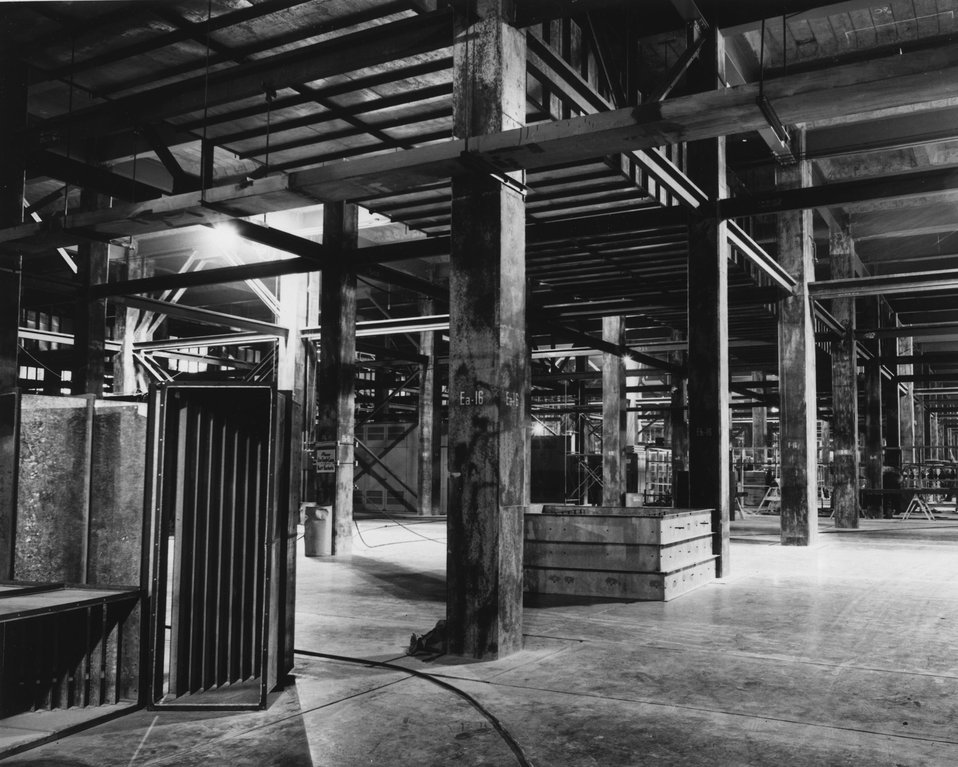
Paducah Area Building C-333 Ground floor from column E-16. c. 1952